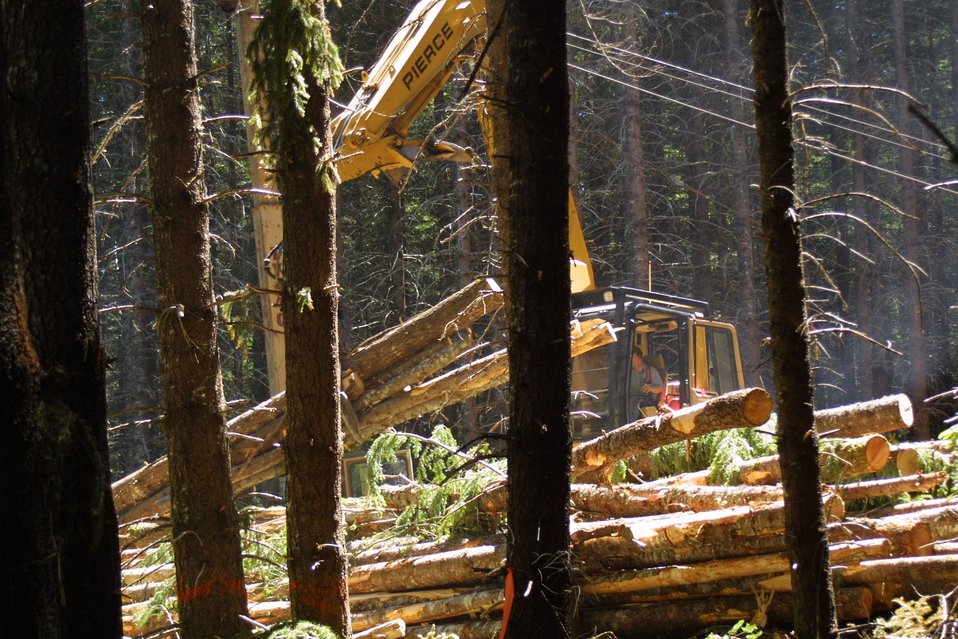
Camas East Timber Sale in Late Successional Reserve.